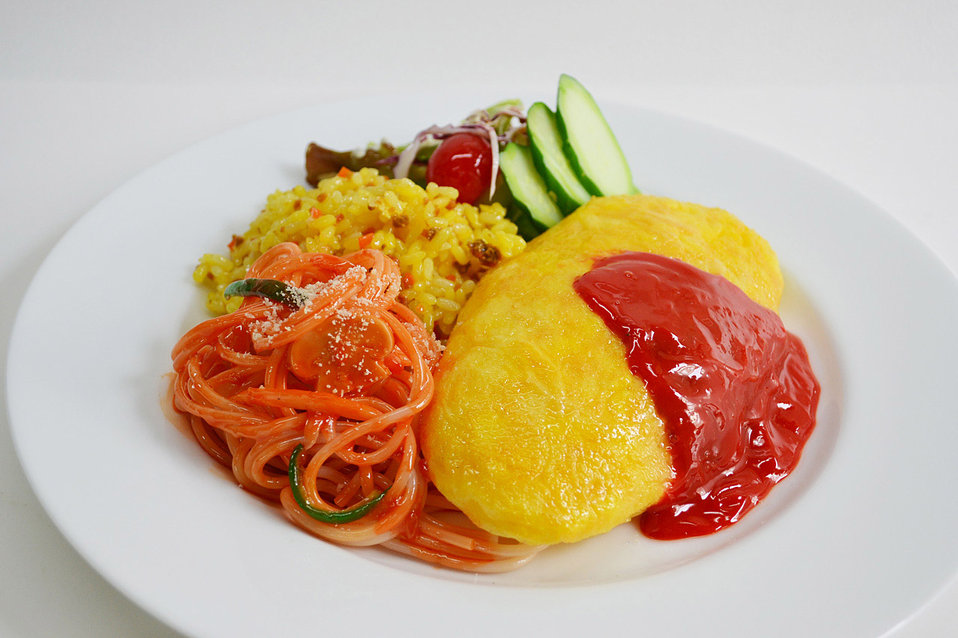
Toruko rice (turkish rice).